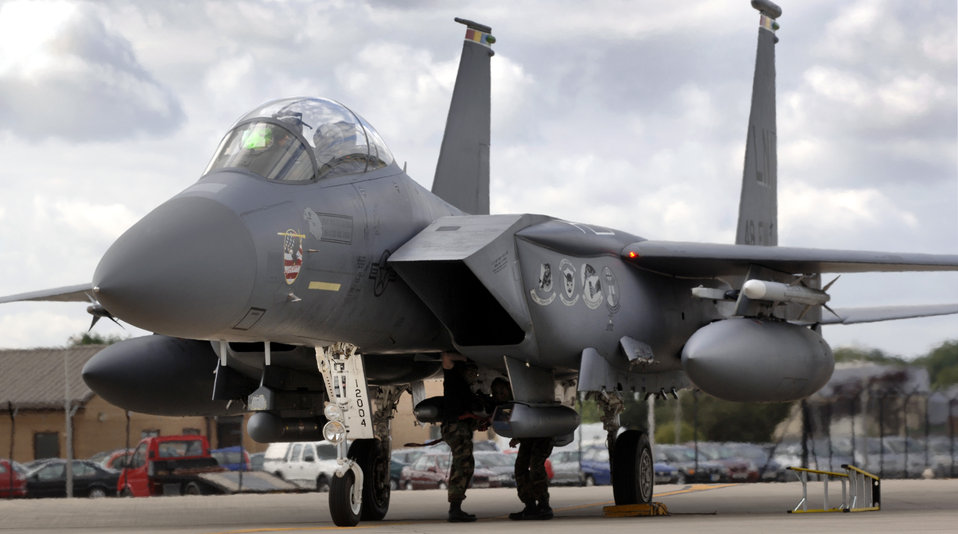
Small-diameter bomb makes Strike Eagle squadron more lethal

Airman 1st Class James Willett (left) and Staff Sgt. David Cruz disarm an F-15E Strike Eagle at Royal Air Force Base Lakenheath, England, on Aug. 1. The 494th Fighter Squadron jet had just returned from a training mission. The Airmen are weapons specialists with the 48th Aircraft Maintenance Squadron.